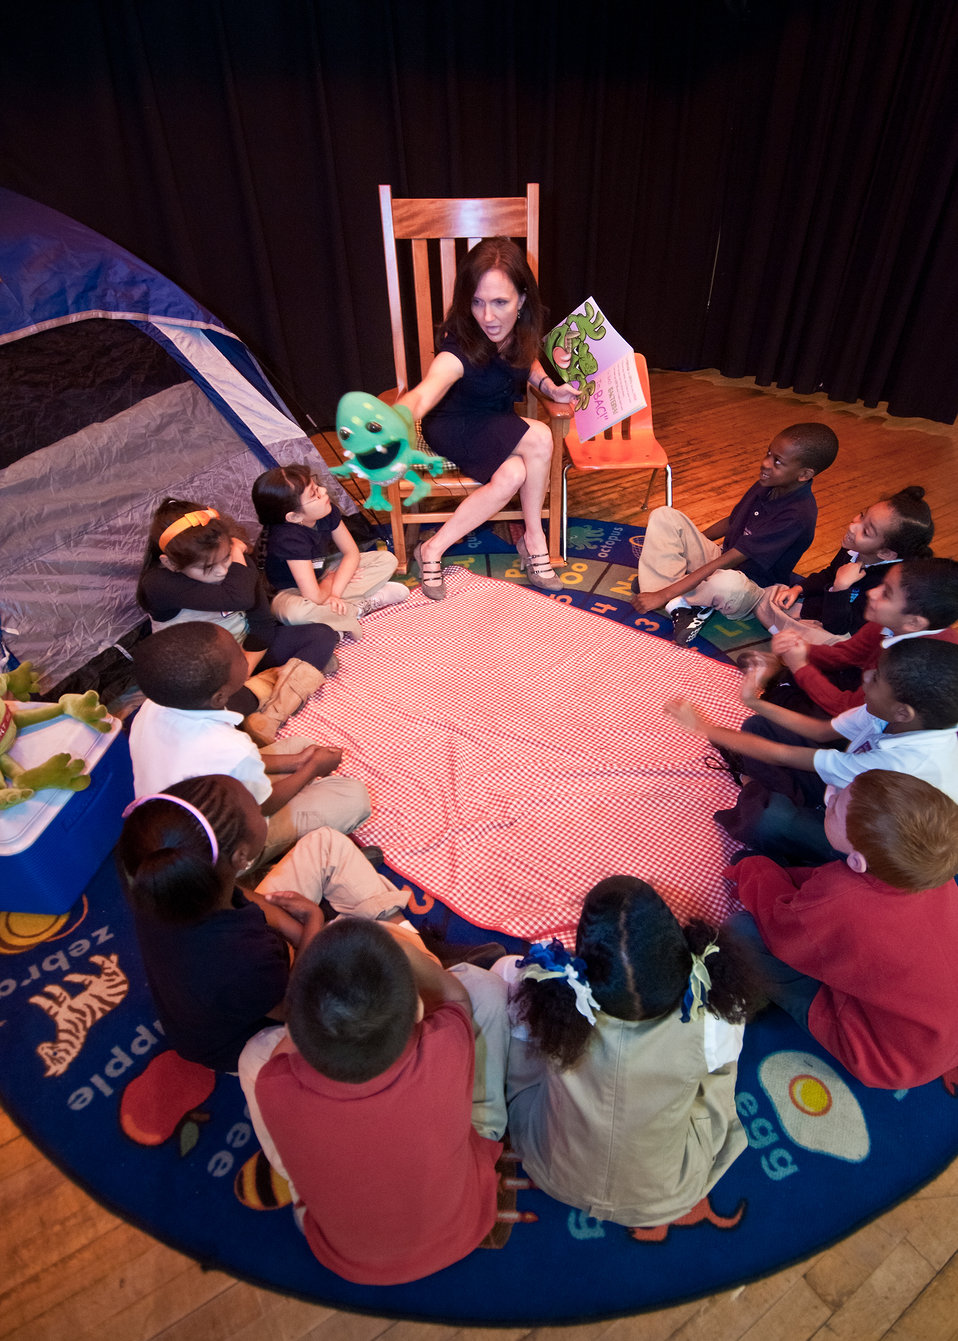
Dr. Elizabeth Hagen, Undersecretary Food Safety reads, “He’s BAC! (A Children’s Guide To Keeping Food Safe)” to students of Maryland City Elementary School in Laurel, Maryland during a United States Department of Agriculture, Food Safety Inspection Service, Food Safety Education Camp, Thursday, May 5, 2011. “He’s BAC! (A Children’s Guide To Keeping Food Safe)” explains the key words in food preparation, Cook, Clean, Separate and Chill, teaching safe food handling.